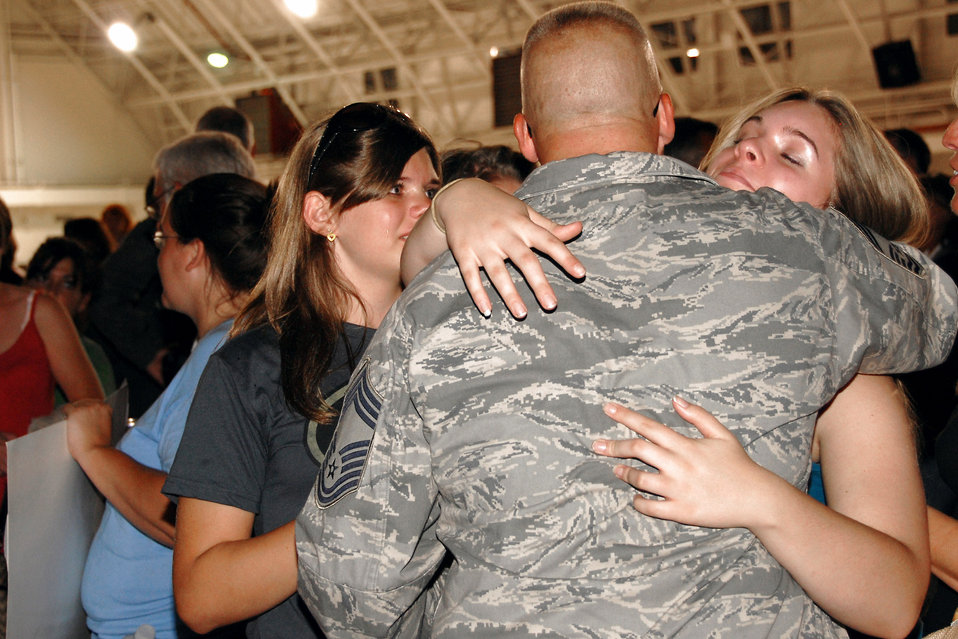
Arriving home!

Chief Master Sgt. Mike Will, with the 174th Fighter Wing at Hancock Field, N.Y., greets his family after returning home Aug. 5 from a deployment to Southwest Asia in support of Operation Iraqi Freedom.